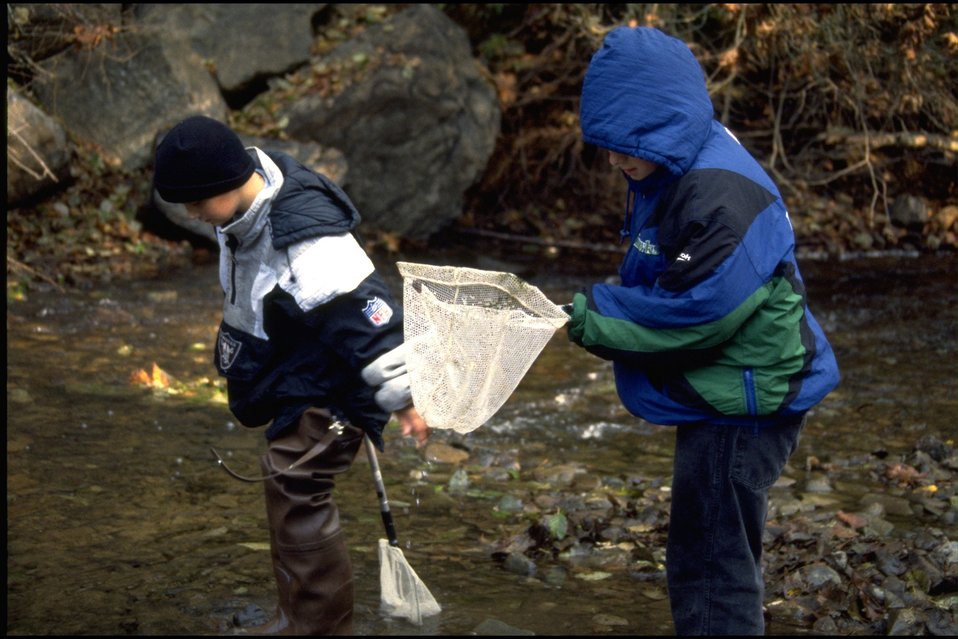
Salmon Watch Program (Whittaker Creek) - Meadow View School.